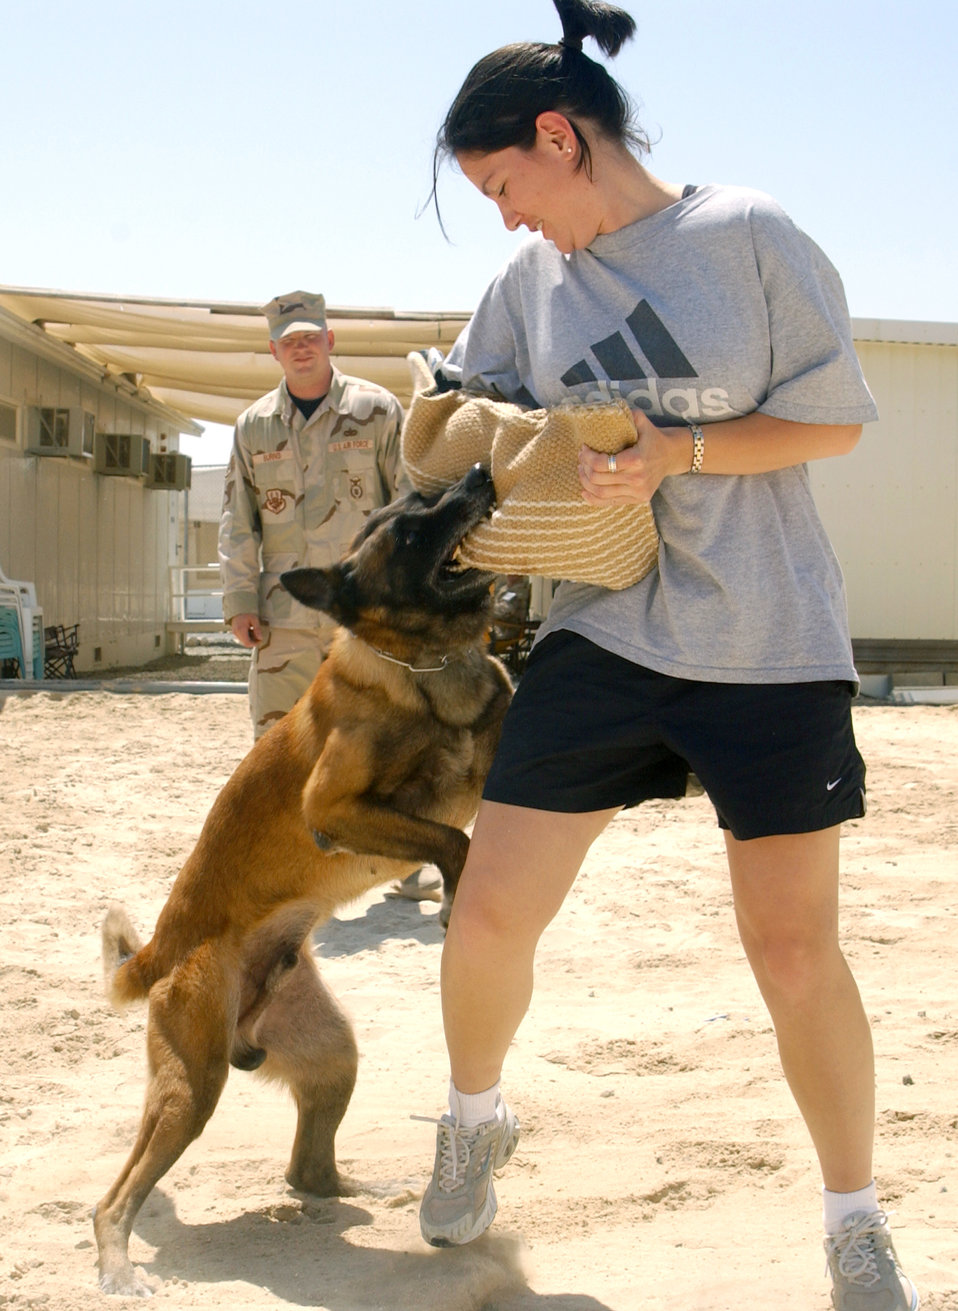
Airmen deploy with four-legged partner

SOUTHWEST ASIA -- Staff Sgt. Thomas Burns watches as Ogar, a military working dog, attempts to take down Staff Sgt. Danielle Carver during training. Six dog handlers are deployed to this forward-deployed location with their dogs. Sergeant Burns and Ogar are deployed from Hickam Air Force Base, Hawaii.